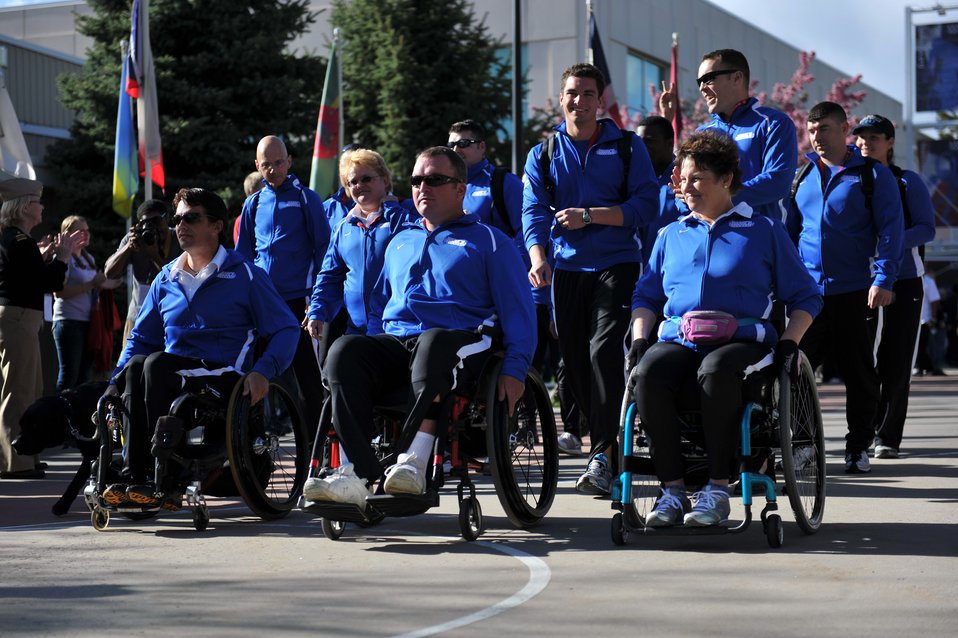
Warrior Games Opening Ceremony

Team Air Force marches down Olympic Path to a cheering crowd during the opening ceremony of the inaugural Warrior Games at the U.S. Olympic Training Center in Colorado Springs, Colo., May 10, 2010. Some 200 wounded warriors and disabled veterans from all the military services are competing in paralympic-style athletic events May 10-14.